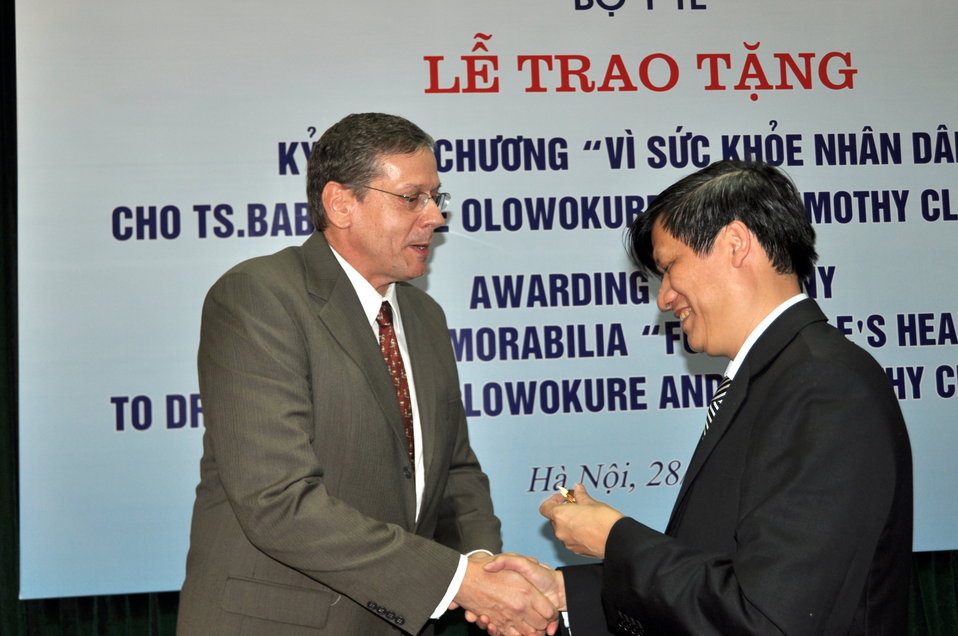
Ministry of Health awards Dr. Timothy Meinke of USAID the ‘Medal for People’s Health’

Hanoi, October 28, 2013.